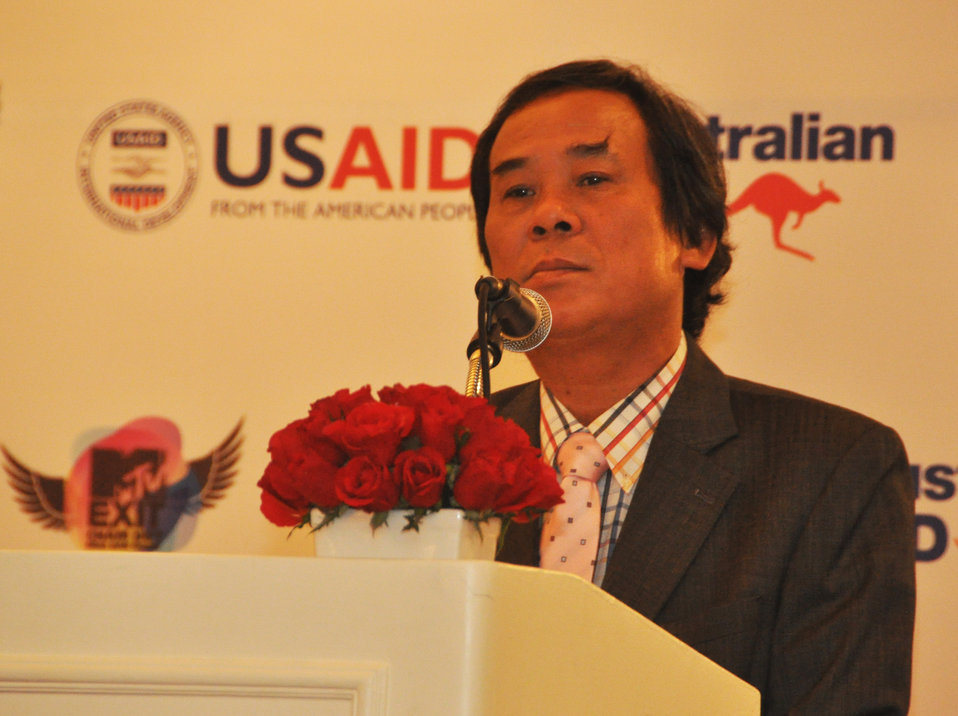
Dr. Nguyen Van Tinh, Director General, International Cooperation Department, Ministry of Culture, Sports and Tourism at the MTV Exit press launch

USAID joins MTVExit to launch documentary and awareness campaign against human trafficking